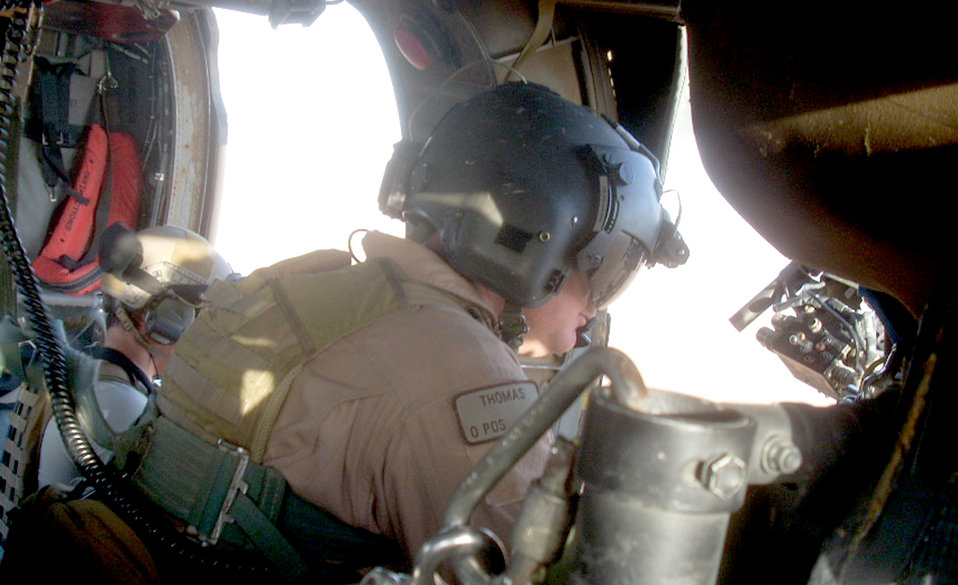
33rd Rescue Squadron crew earns MacKay Trophy

Master Sgt. Dustin Thomas scans the terrain for threats July 17, 2009, in Afghanistan. Sergeant Thomas, along with Capt. Robert Rosebrough, 1st Lt. Lucas Will, and Staff Sgt. Tim Philpott, are members of the 33rd Rescue Squadron at Kadena Air Base, Japan, who were recently announced as the 2009 MacKay Trophy winners.